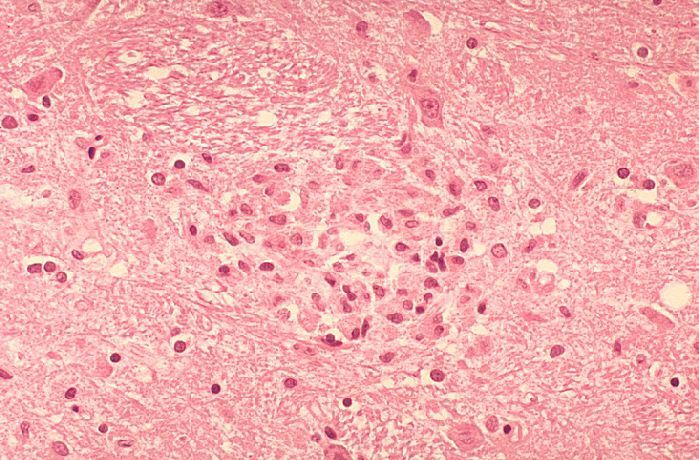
Histopathology showing microglial nodule in brain of patient who died of AIDS.